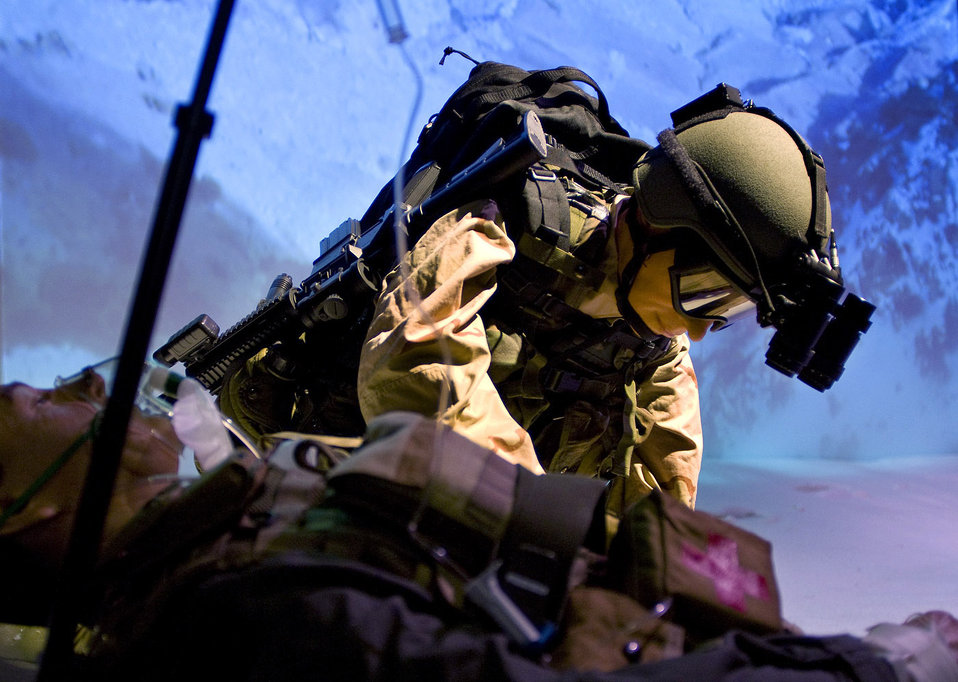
Realistic portrayal

At the new Warrior Airman exhibit at the National Museum of the U.S. Air Force, a display of the Battle of Takur Ghar has detailed mannequins representing Tech. Sgt. Keary Miller, a pararescueman who was in the battle, and a wounded servicemember.